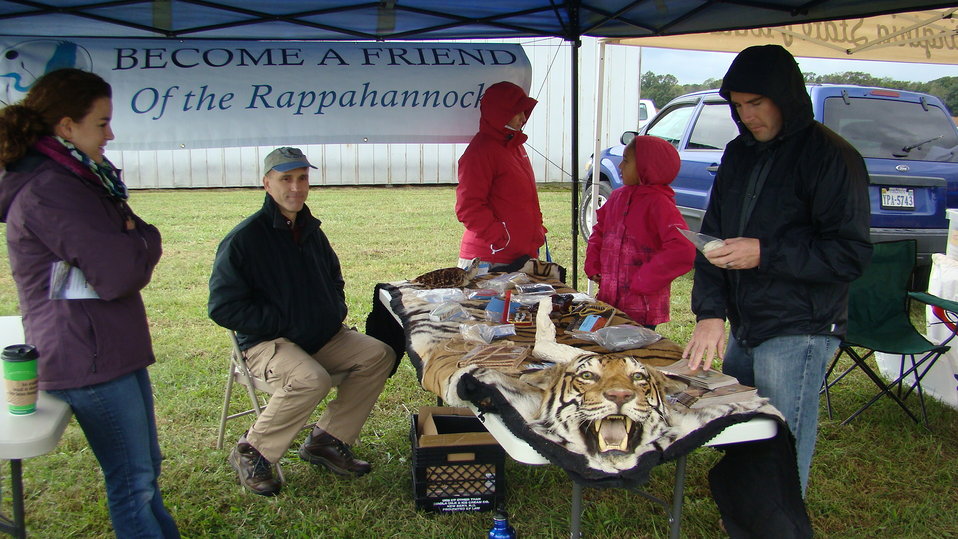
Rappahannock River Valley NWR 15th Anniversary

USFWS Office of Law Enforcement exhibit at 'Go Wild!' celebration.